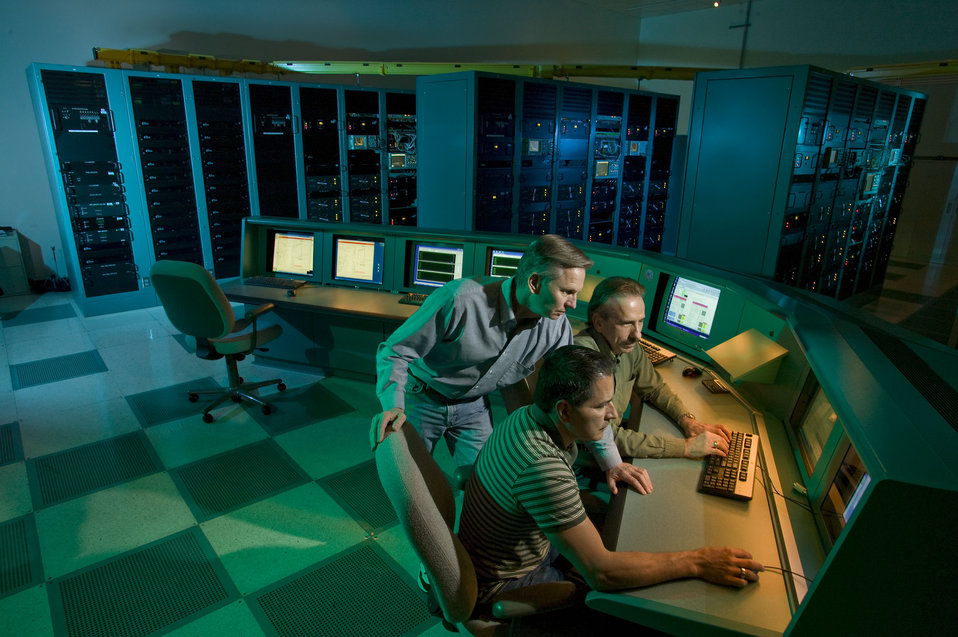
Ernesto Padilla and Don Browning, left to right seated, and Gaylen Erbert, standing, of Lawrence Livermore National Laboratory attend to the control console of the Master Oscillator Room(MOR) at the National Ignition Facility.